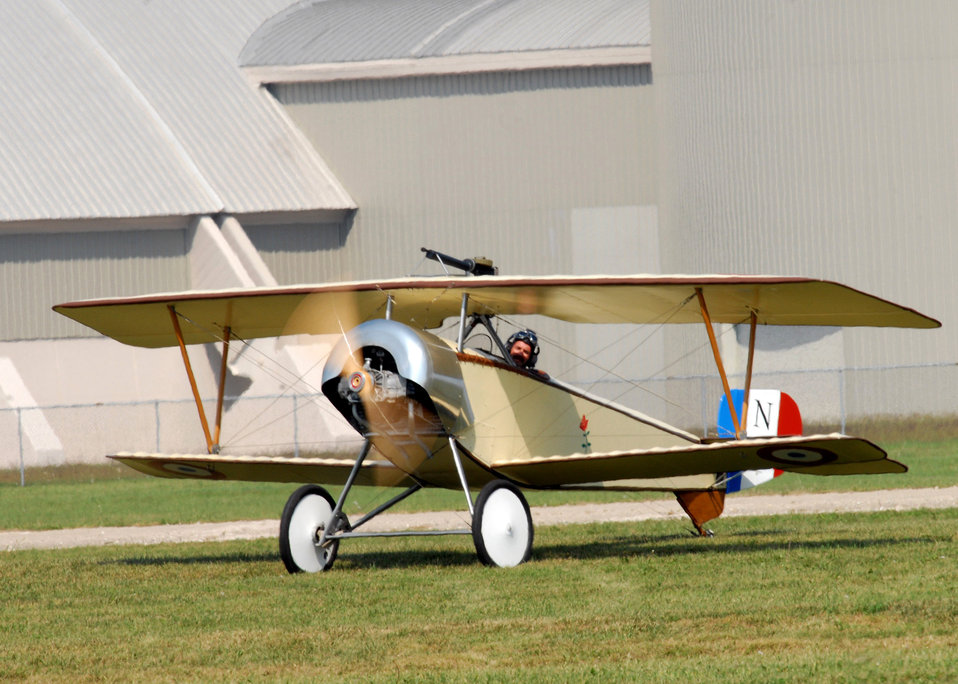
World War 1 Fly In

An aircraft lands after performing in a